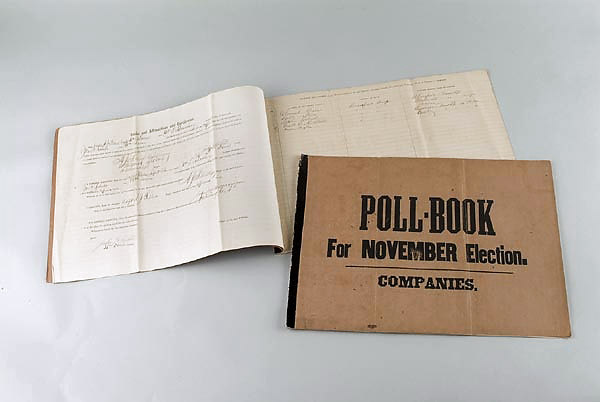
Servicemembers to follow long absentee voting tradition

Polling books like this one used in Crawford County, Pa., during the Civil War recorded the names of Soldiers who cast absentee ballots for the 1864 presidential election.